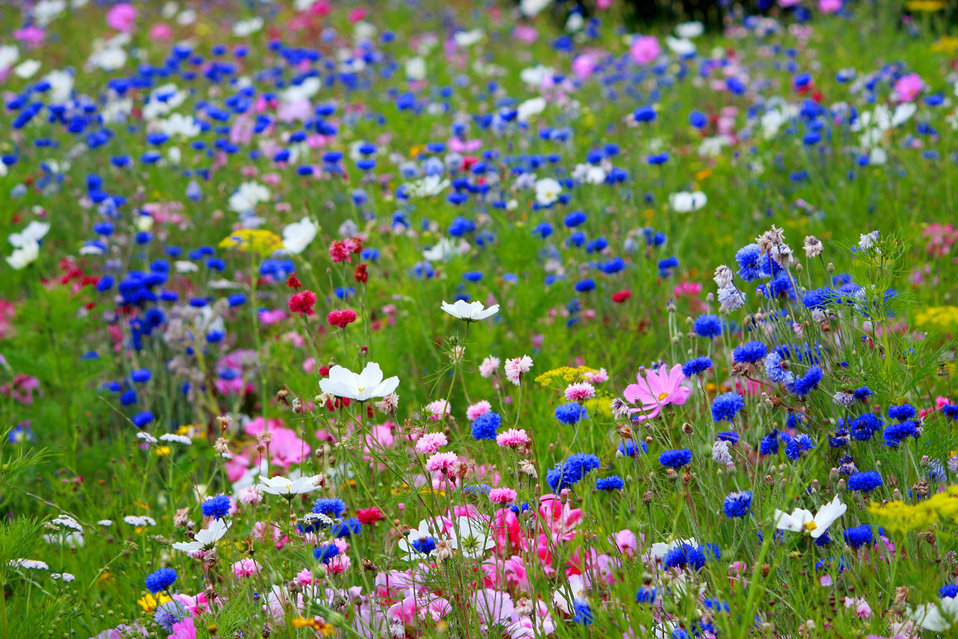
Wild flowers

Beautiful wild flowers in the meadow, blue and pink cornflowers.